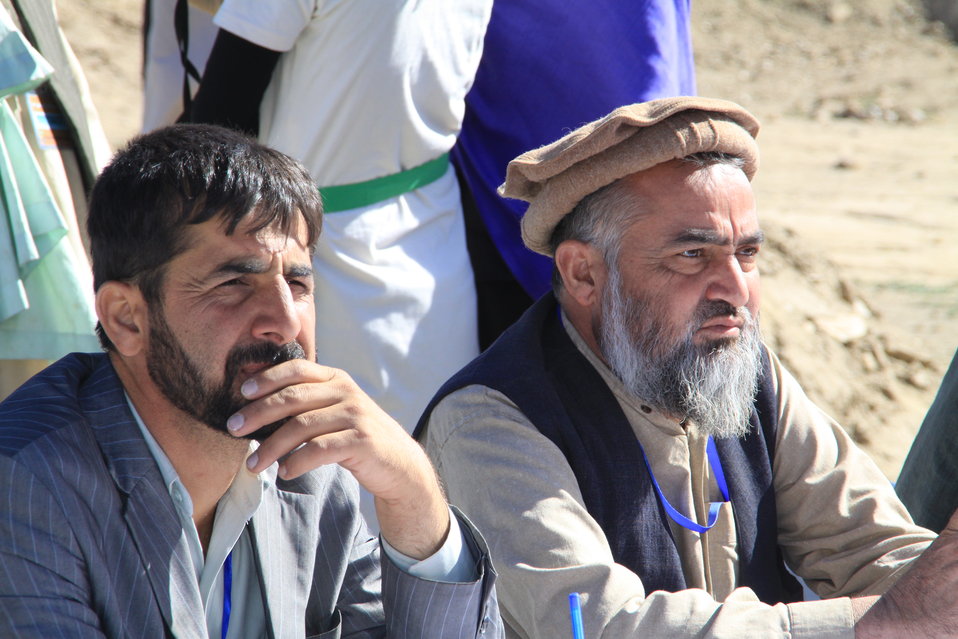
AVIPA Plus Wheat Seed Distribution 101005

US Ambassador Karl Eikenberry and USAID Acting Mission Director Kevin Brownawell joined the Minister of Agriculture, Irrigation and Livestock, H.E. Minister Mohammed Rahimi in signing a Memorandum of Understanding and distributing vouchers to area farmers for wheat and fertilizer.